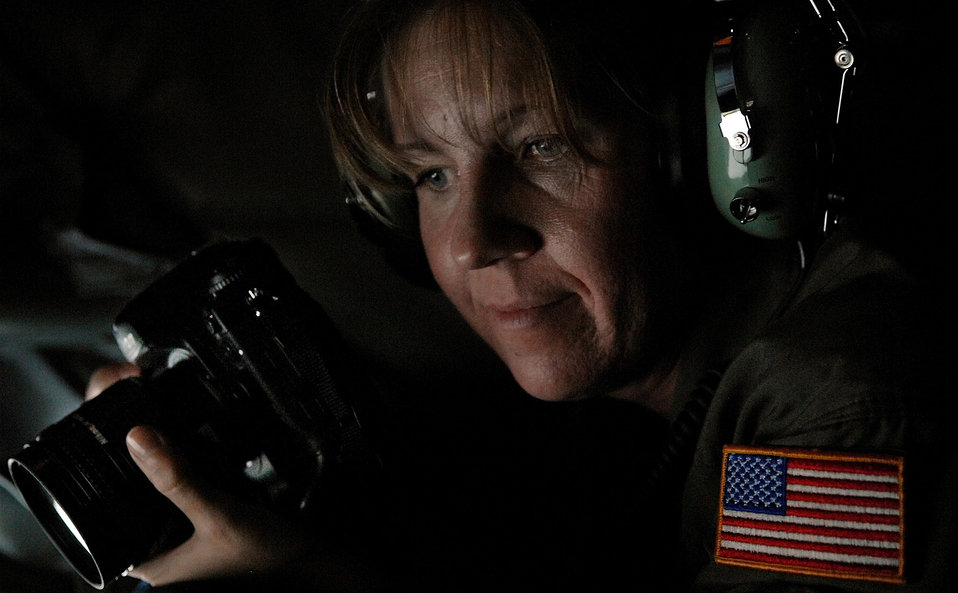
Photographer captures mission

Aerial still photographer Tech. Sgt. Michelle Desrochers looks out the window of a KC-135R Stratotanker during a refueling mission July 30. The aircraft is assigned to the 336th Air Refueling Squadron out of March Air Reserve Base, Calif. Sergeant Desrochers is from the 4th Combat Camera Squadron also at March ARB.